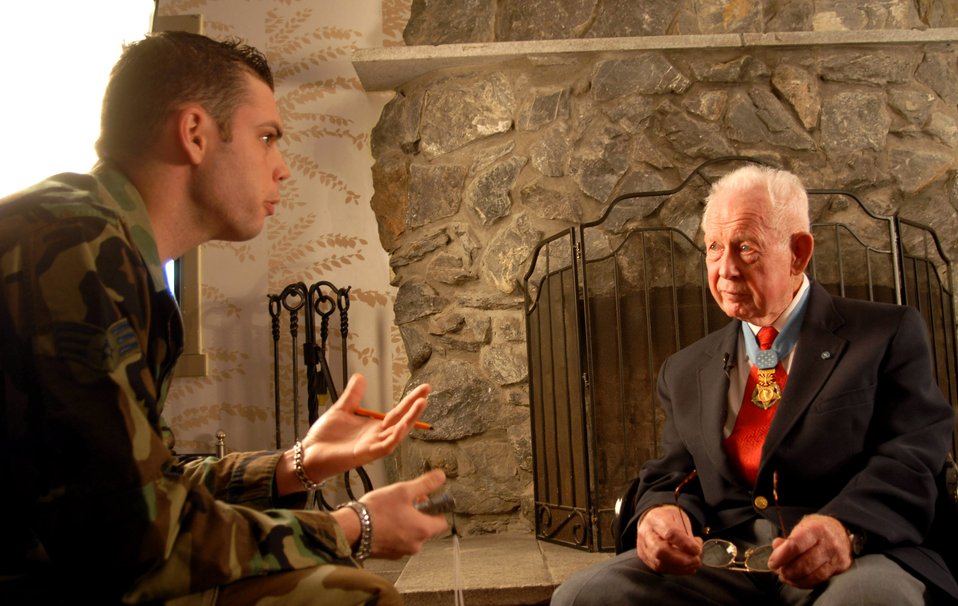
A true honor

Medal of Honor recipient, retired Col. Bernard F. Fisher, is interviewed Feb 26 at Kunsan Air Base, South Korea. Colonel Fisher was the first living Air Force member to receive the Medal of Honor. Colonel Fisher received the Medal of Honor for heroism during the Vietnam War.